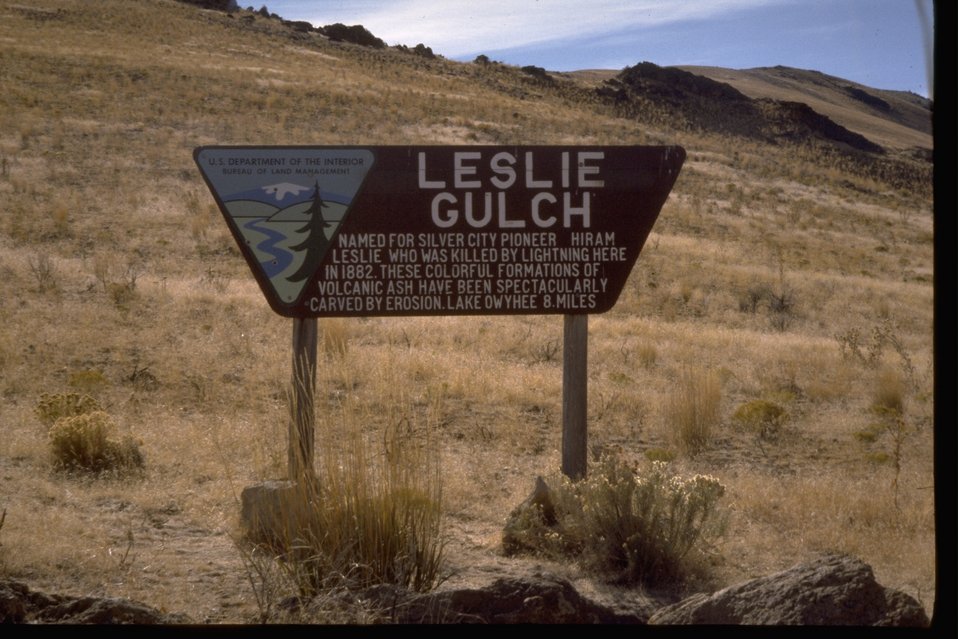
The Leslie Gulch sign at the head of the gulch in the Upper Leslie Gulch Wilderness Study Area. OR 3-74.